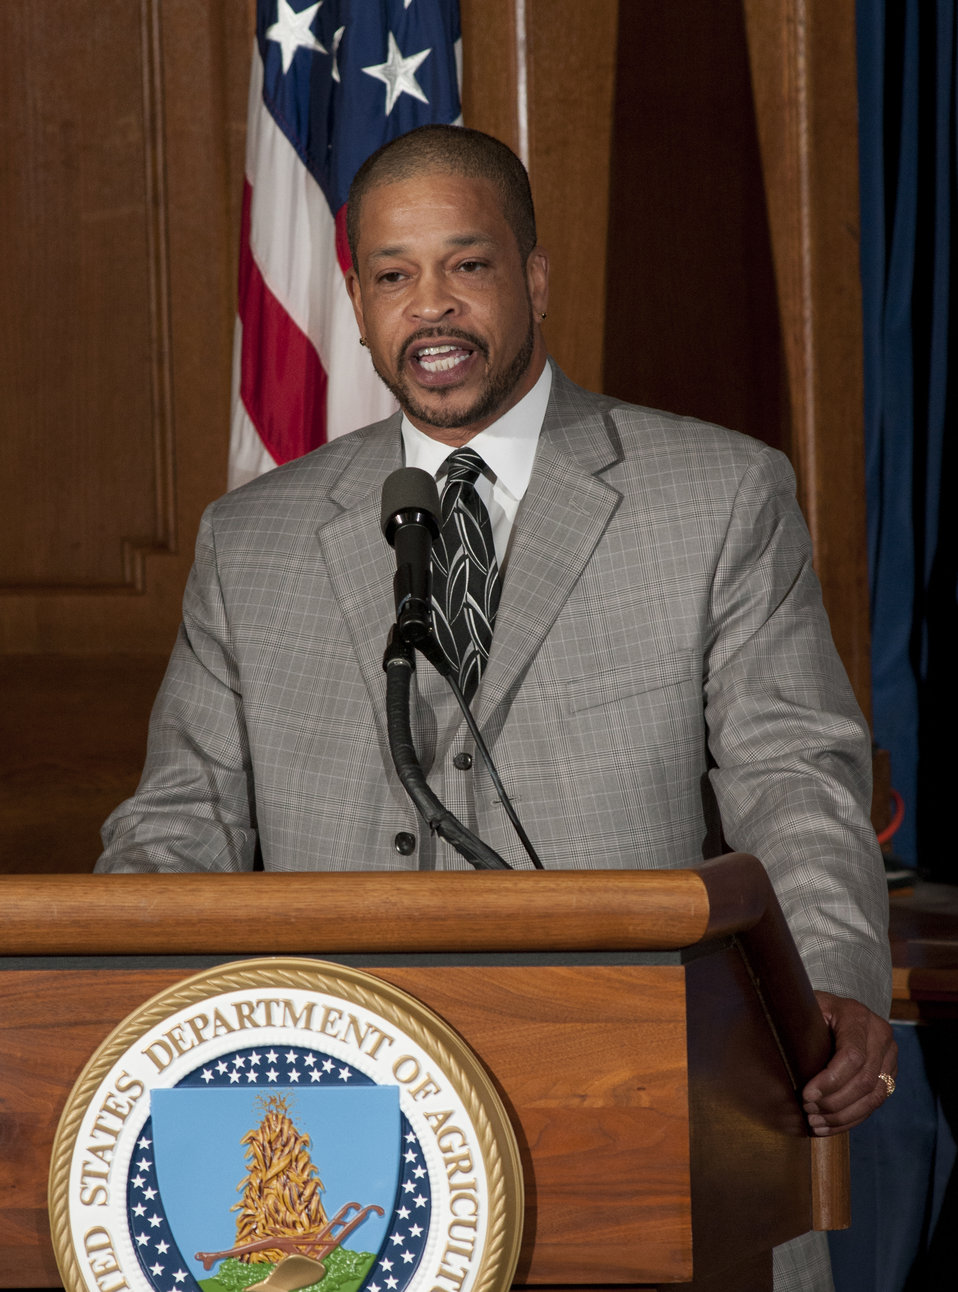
William (Billy) P. Milton, Jr.,Deputy Director, Office of Human Resources Management, Departmental Management, U.S. Department of Agriculture, addresses the Work Force Recruitment Program’s (WRP) 'Your Key To Hiring Student Interns and Employees with Disabilities” event hosted by the United States Department of Agriculture (USDA) in the Jefferson Auditorium, Washington, D.C. on Tuesday, February 7, 2012.